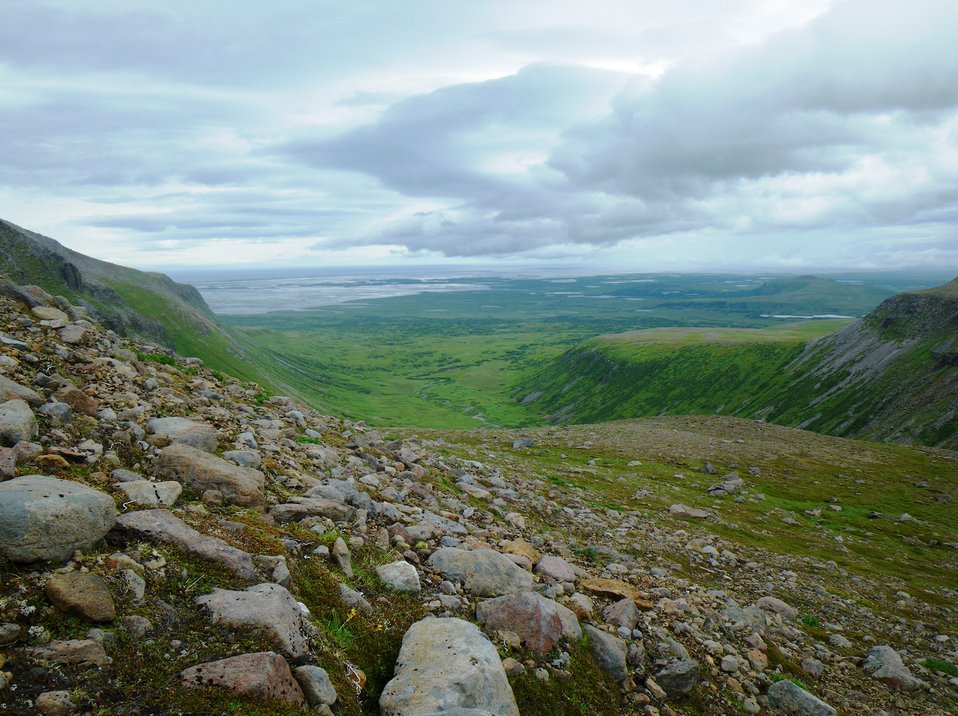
Izembek Wilderness

Wilderness near Frosty Peak, Izembek National Wildlife Refuge
Photo by Kristine Sowl,
USFWS, Public Domain